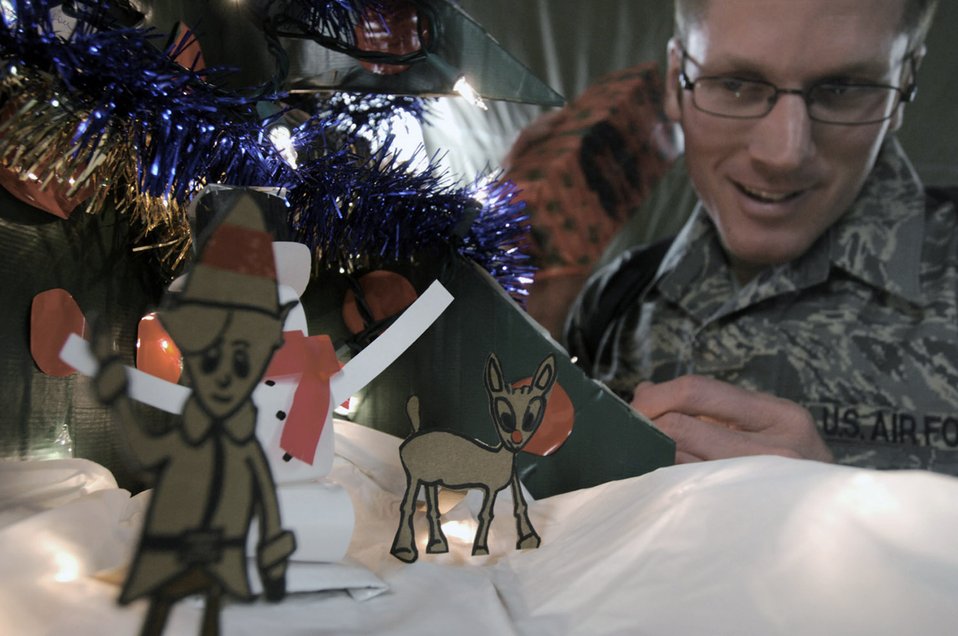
Holiday spirit in Afghanistan

Tech. Sgt. Ryan McMaster looks at cartoon characters he created in a holiday diorama made from locally-procured materials Dec. 14 at Bagram Air Base, Afghanistan. Sergeant McMaster is an aircrew life support technician with the 774th Expeditionary Airlift Squadron. (